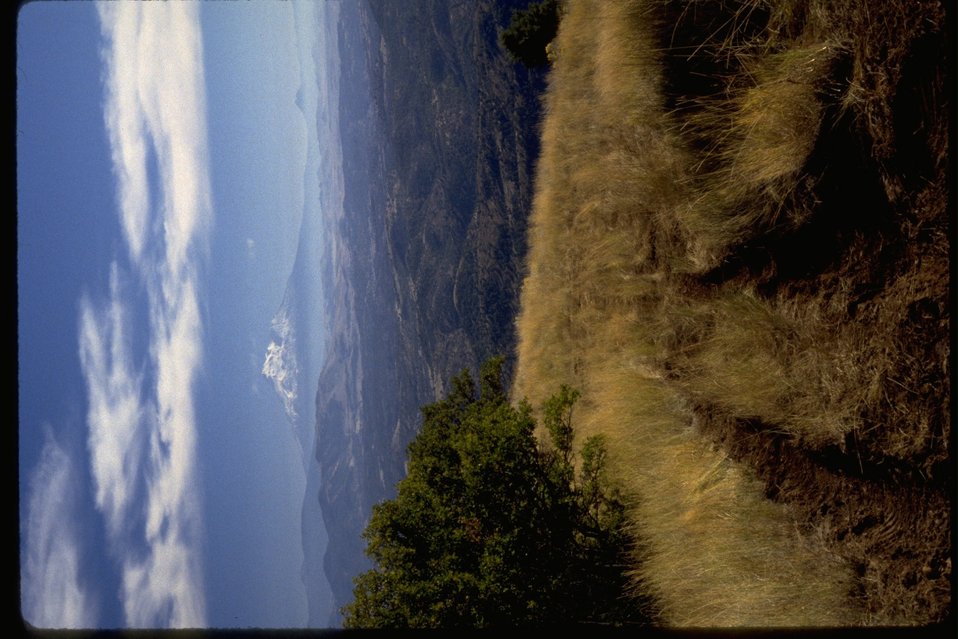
Mount Shasta from Lone Pine Ridge.